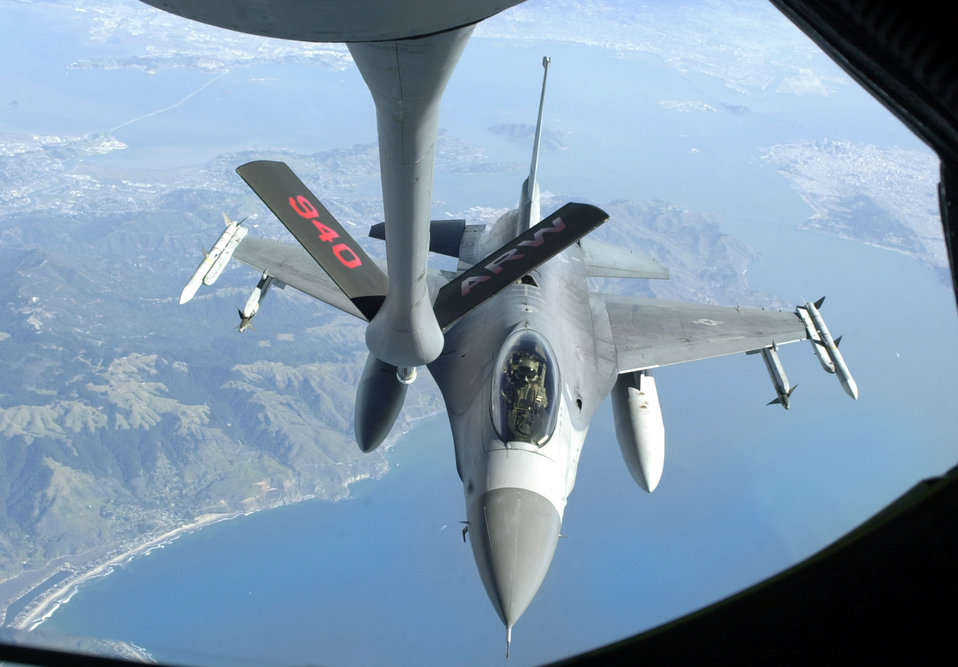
Total force at home

OPERATION NOBLE EAGLE -- An F-16 Fighting Falcon from the California Air National Guard prepares to receive fuel from an Air Force Reserve Command KC-135E Stratotanker during an Operation Noble Eagle combat air patrol over San Francisco's Golden Gate. The KC-135E and its crew are assigned the 940th Air Refueling Wing at Beale Air Force Base, Calif. The F-16 and its pilot are from the 144th Fighter Wing at Fresno Air National Guard Base, Calif.